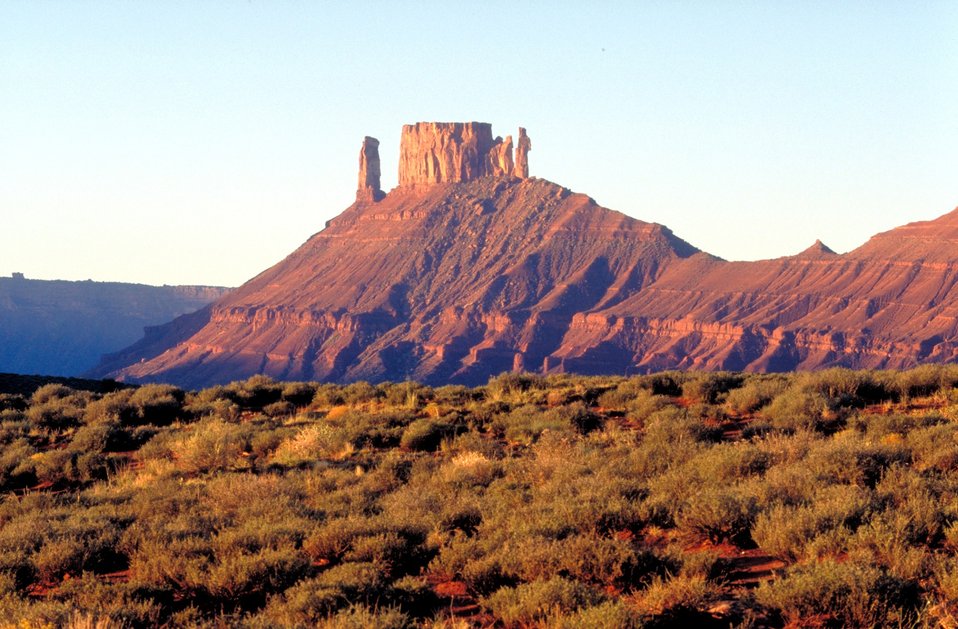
Priest and Nuns along Highway 128 near Moab, Utah.